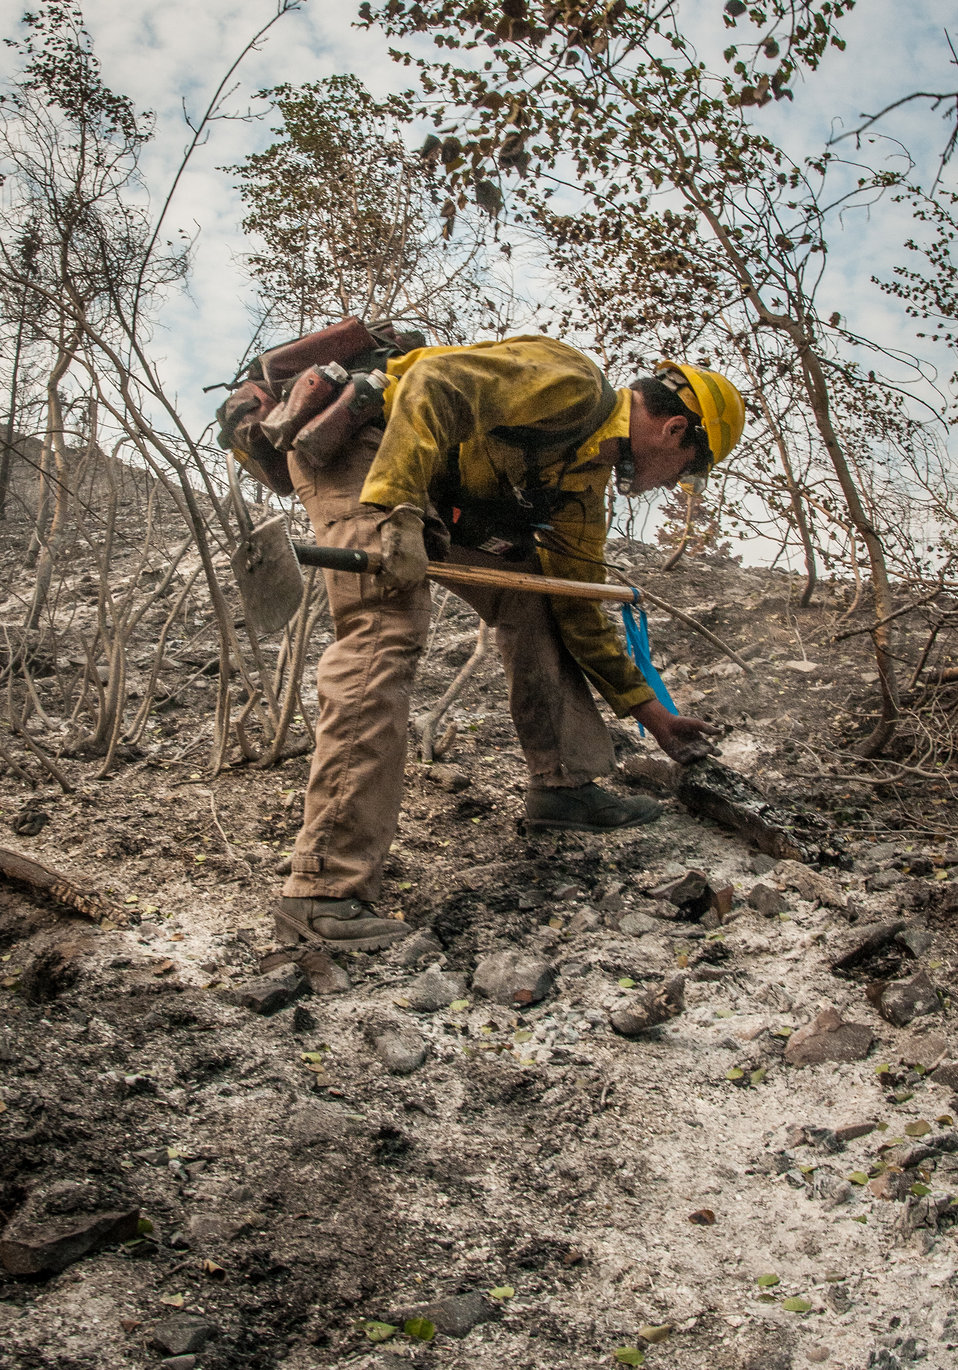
Department of the Interior, Indian Affairs (BIA) Southern Plains Initial Attack Type 2 Crew Squad Boss Trainee Bobby Robedeaux, of the Pawnee, Ponca and Otoe tribes, traverses a burned out hillside, looking and feeling for hotspots above and below the ground, during the Beaver Creek Fire, west of Hailey, ID, in the interface between U.S. Department of Agriculture (USDA) Forest Service (FS) and Sawtooth National Forest and Bureau of Land Management (BLM) lands, on Wednesday, Aug 21, 2013.